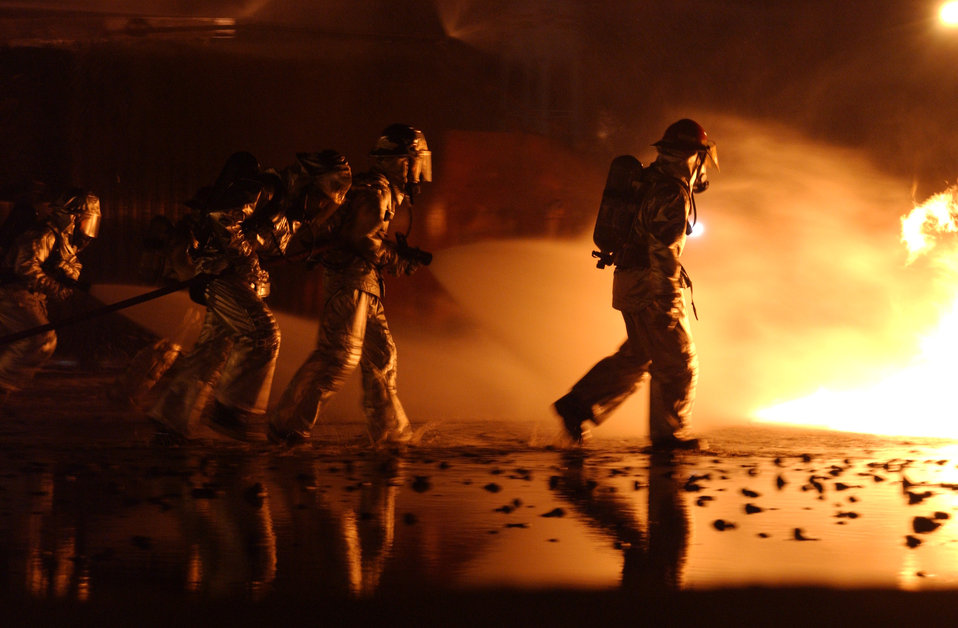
Some like it hot

GOODFELLOW AIR FORCE BASE, Texas -- Department of Defense Fire Academy students extinguish a jet fuel fire on a large frame aircraft trainer here recently. The 68-day course challenges students both physically and mentally. Goodfellow's Firefighter Apprentice Course, ranked No. 1 in the world for fire training, trains about 2,000 students a year including allied forces.